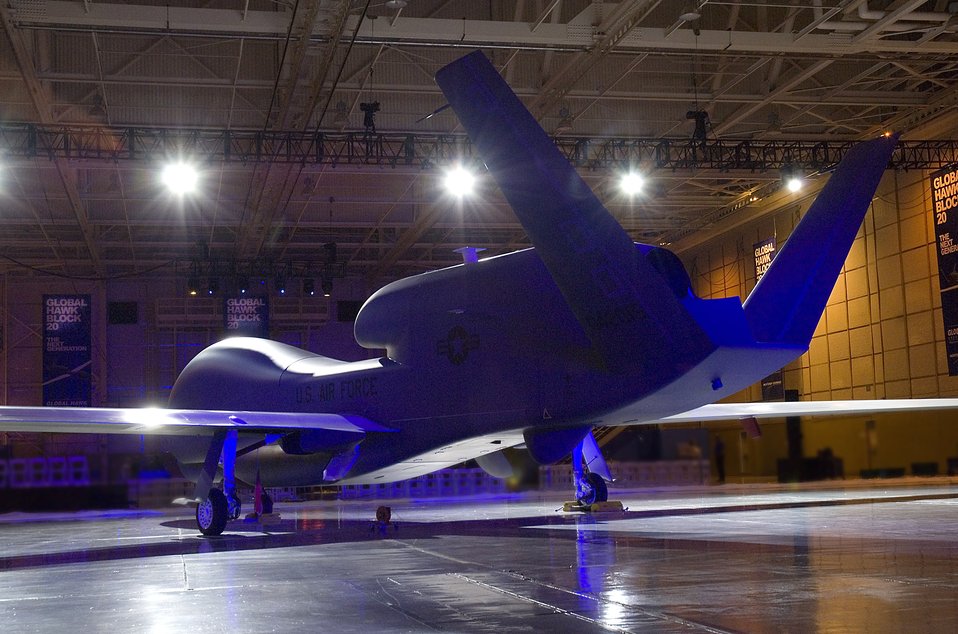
RQ-4 Global Hawk

The first production version of the RQ-4 Block 20 Global Hawk unmanned aerial reconnaissance vehicle is unveiled in Palmdale, Calif., Sept. 6. The program is managed by the 303rd Aeronautical Systems Group at Wright-Patterson Air Force Base, Ohio. The Northrop Grumman-built version represents a significant increase in capability.